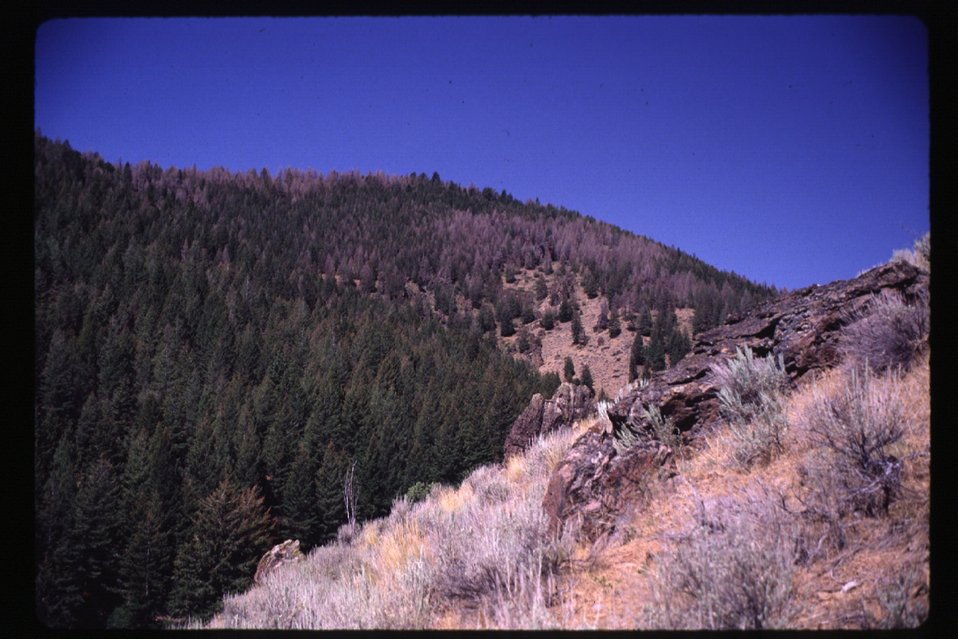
Tussock Moth damage Forestry Shoshone Field Office USRD Upper Snake River District